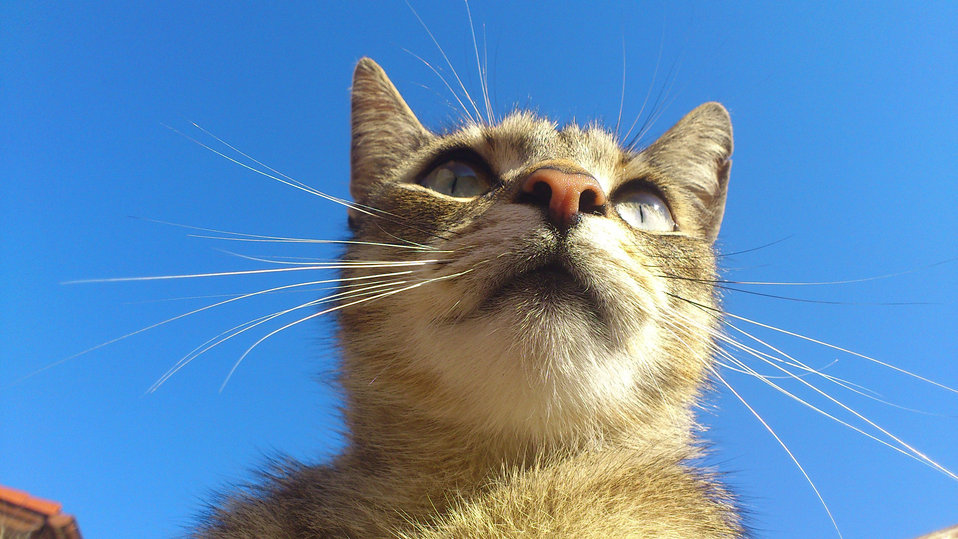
Domestic cat

Listening cat.